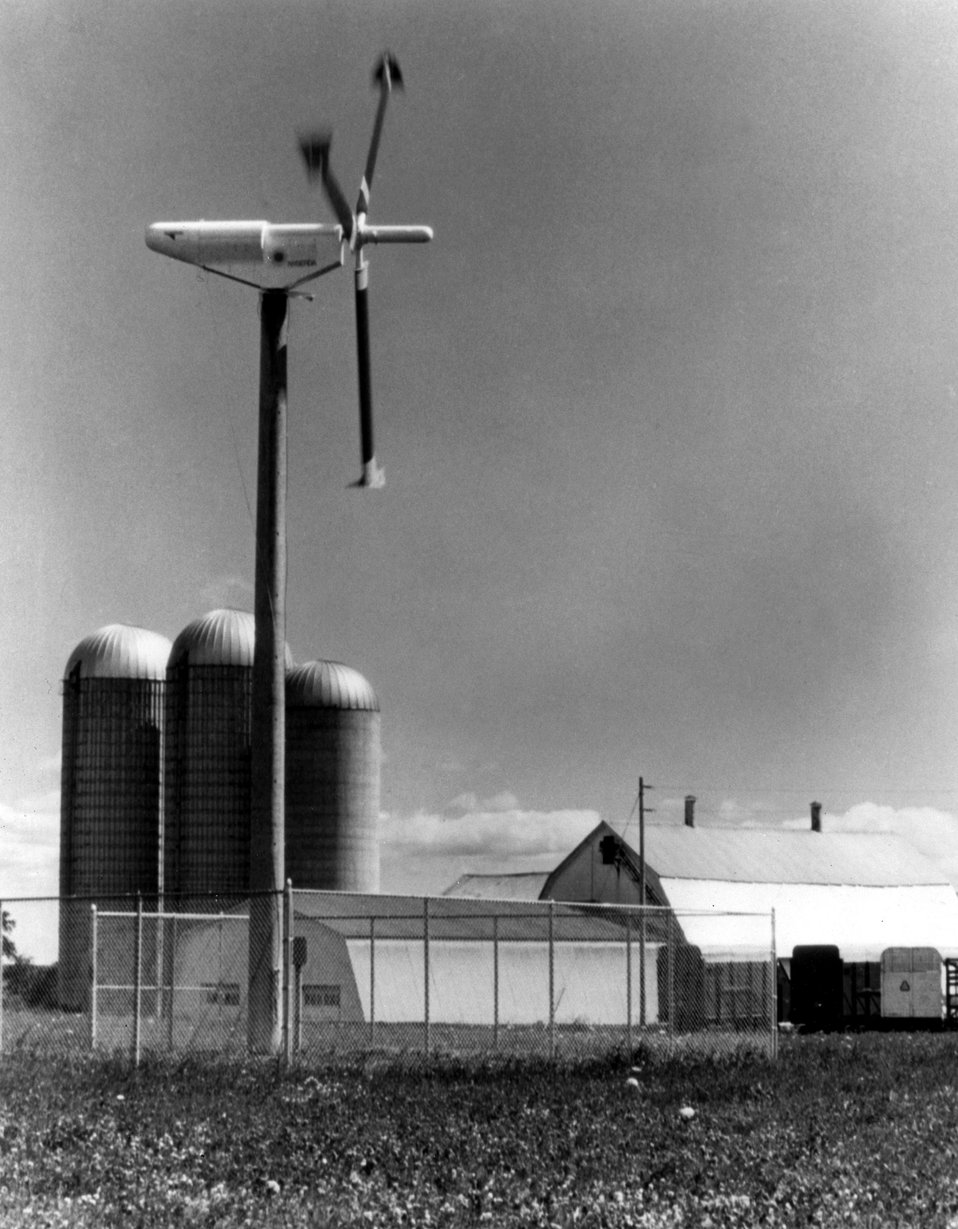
Wind generator on upstate New York farm. c. 1978